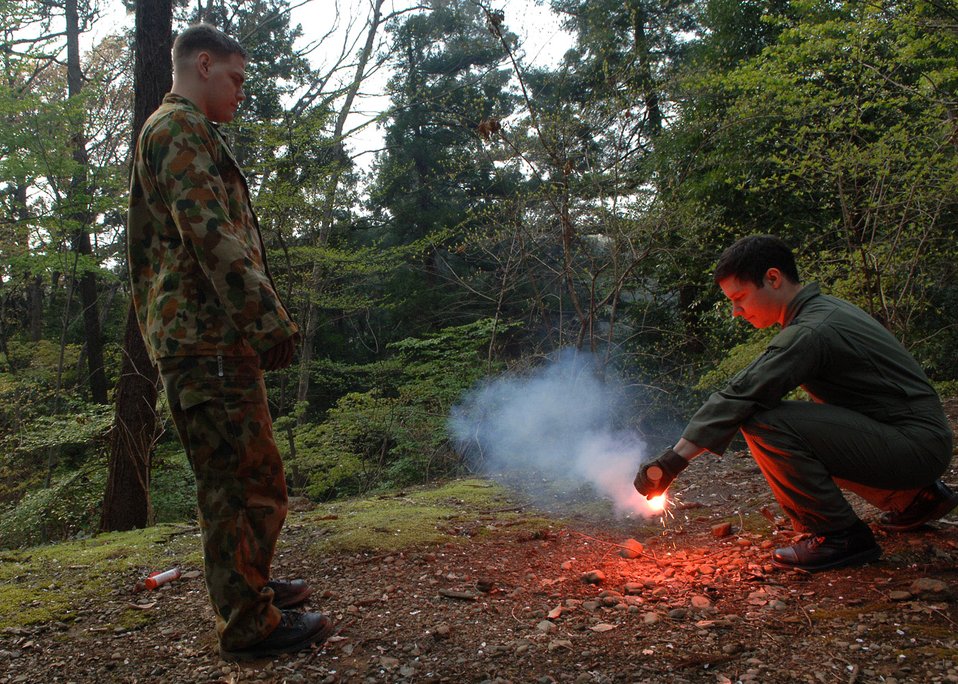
Training to survive

Senior Airman Jason Davis trains Capt. Pierre Alvarado to safely ignite flares during a survival training exercise April 10 near Yokota Air Base, Japan. Airman Davis is a survival, evasion, resistance and escape specialist from the 374th Operational Support Squadron. Captain Alvarado is from the 36th Airlift Squadron.